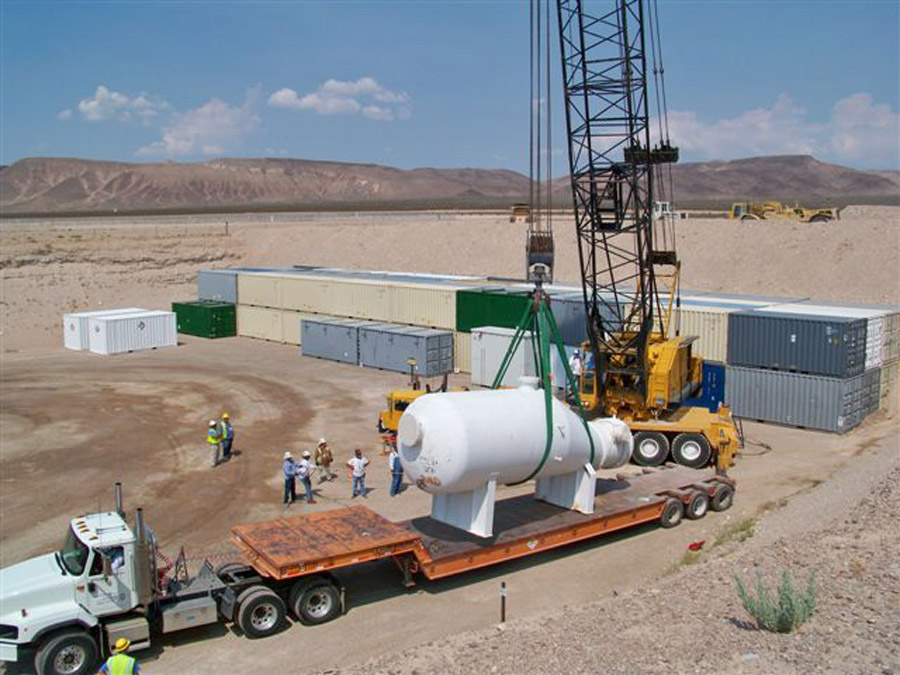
Steam generator removed

Waste management specialists disposed approximately 1.8 million cubic feet of low-level and mixed low-level radioactive waste at the Area 5 Radioactive Waste Management Site, which amounts to 2,558 shipments and 13,173 packages of waste. These volumes constitute approximately 5 percent of the low-level and mixed low-level waste generated throughout DOE complex. This photo shows Area 5 waste disposal operations.